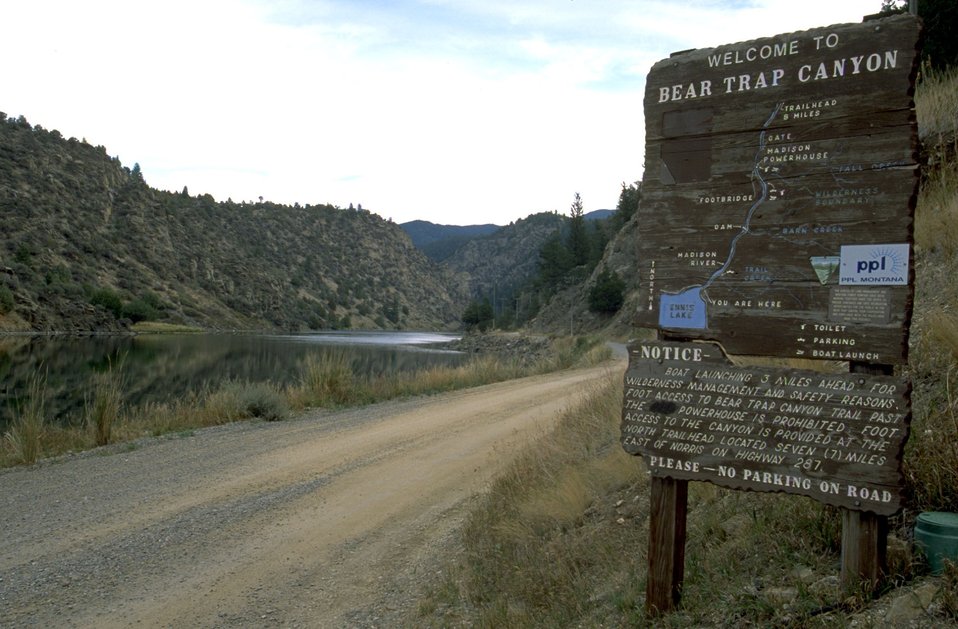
Entrance Sign and Map at Bear Trap Canyon